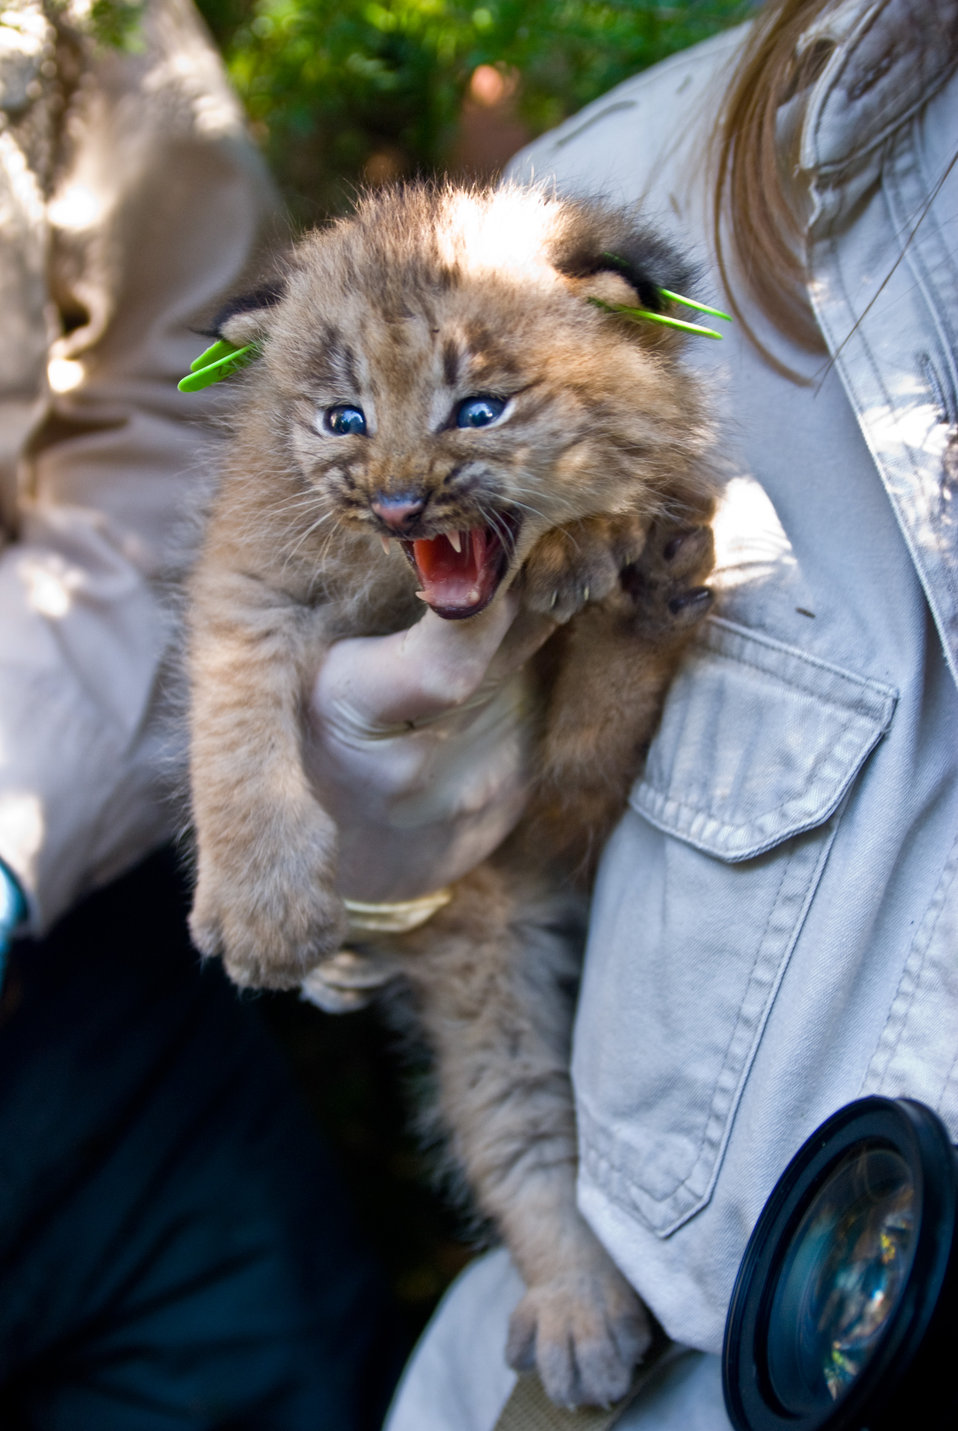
Canada Lynx Kitten, not your average kitten

While their looks and behavior can be reminiscent of a domesticated cat (Felis Catus), they are very much a wild species, as demonstrated by this kitten's reaction.